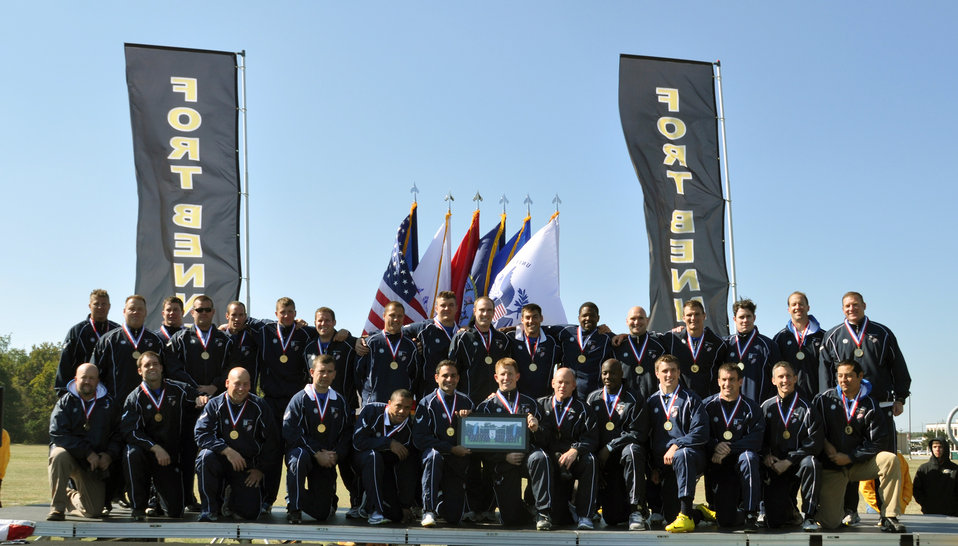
AF rugby

The Air Force rugby team wears their medals after they emerged as champions of the 2010 Armed Forces Rugby Championship tournament, held in Ft. Benning, Ga.